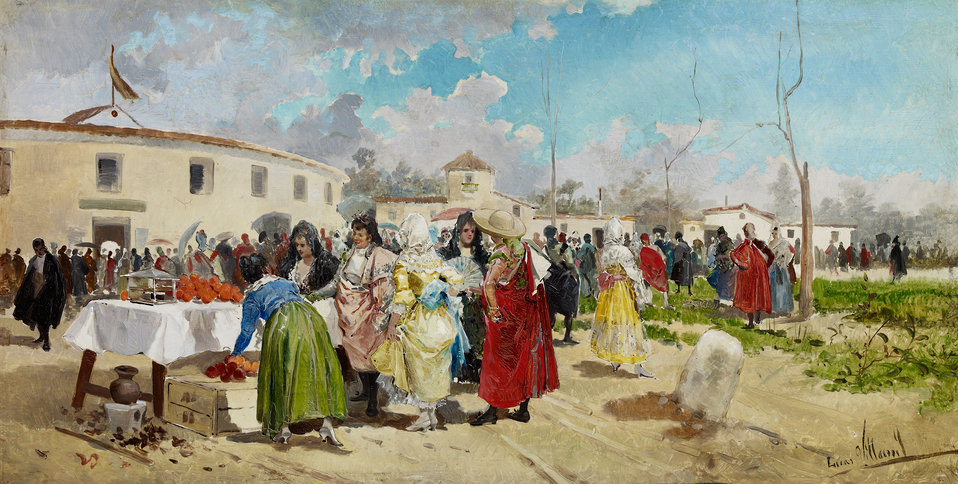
Entering the Bullring, Sun. Oil on panel. 28.5 x 55 cm, Inv. CTB.1995.47 Museo Carmen Thyssen Native name Museo Carmen Thyssen Location Málaga, Spain Coordinates 36° 43′ 17″ N, 4° 25′ 22″ W Established 2011 Website www.carmenthyssenmalaga.org